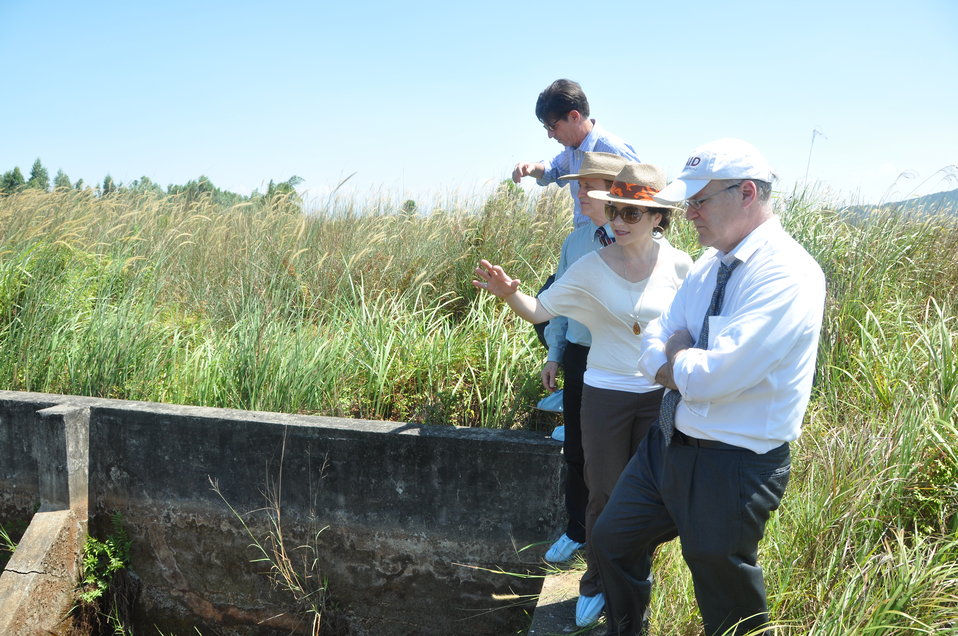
USAID Deputy Administrator Donald Steinberg and delegation visit Danang Airport

USAID Deputy Administrator Donald Steinberg Visits Vietnam